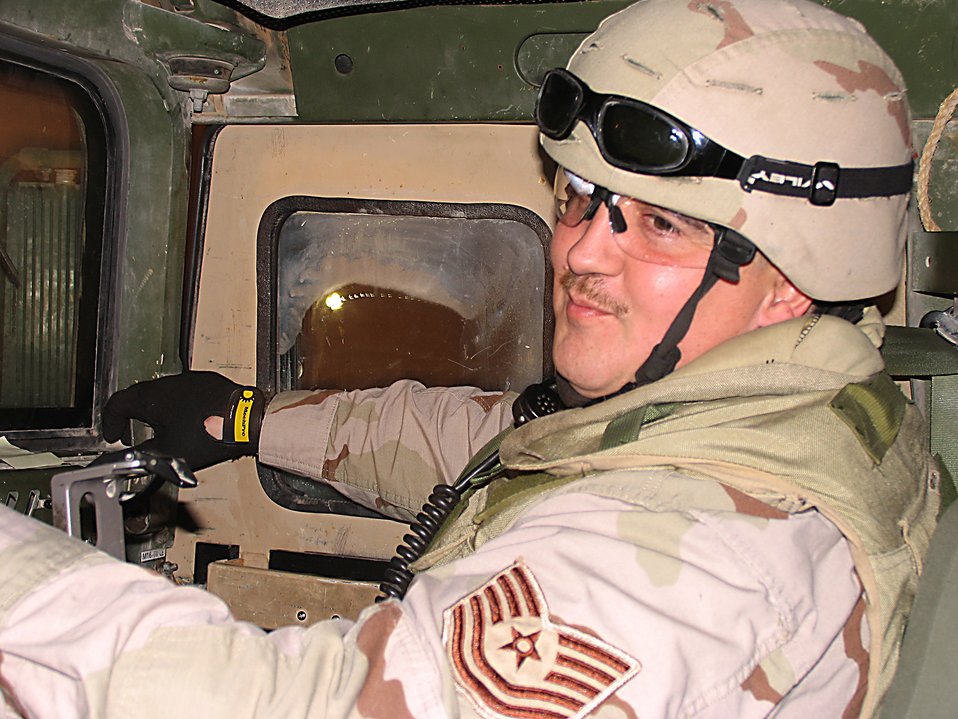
Ellsworth deployed

CAMP BUCCA, Iraq (AFPN) -- Tech. Sgt. Michael Taylor talks with his driver during a routine patrol. Sergeant Taylor is a flight sergeant with the 586th Expeditionary Security Forces Squadron and in charge of the mobile patrols inside the camp. He is from West Terre Haute, Ind., and deployed from Ellsworth Air Force Base, S.D.